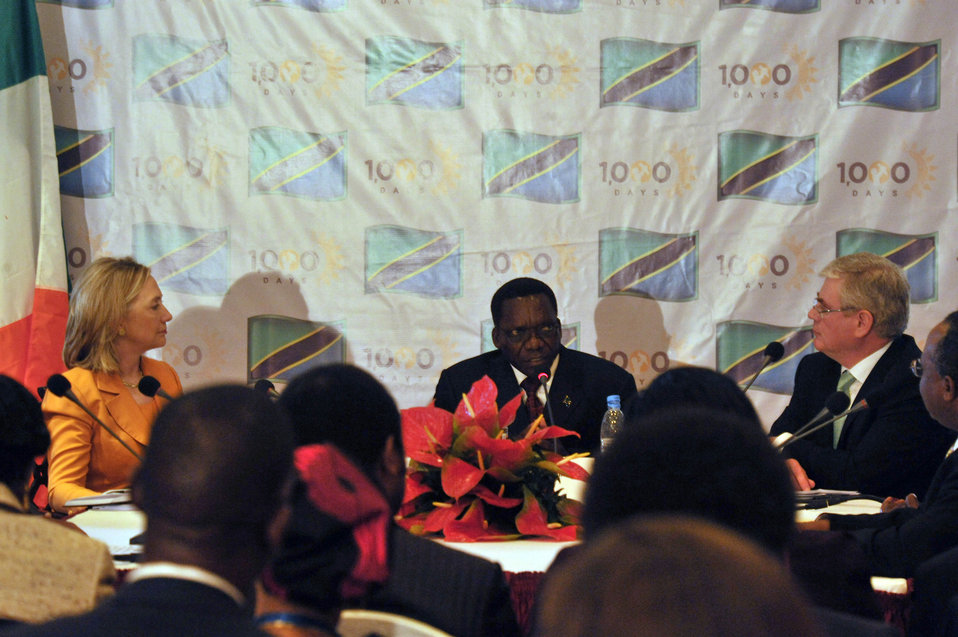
Secretary Clinton Meets With Tanzanian Prime Minister Pinda and Irish Deputy Prime Minister Gilmore

U.S. Secretary of State Hillary Rodham Clinton, left, meets with Tanzanian Prime Minster Mizengo Pinda, center, and Irish Deputy Prime Minister Tanaiste Eamon Gilmore, right, at the High-Level Meeting on Nutrition and 1,000 Days Initiative in Dar es Salaam, Tanzania, on June 12, 2011.